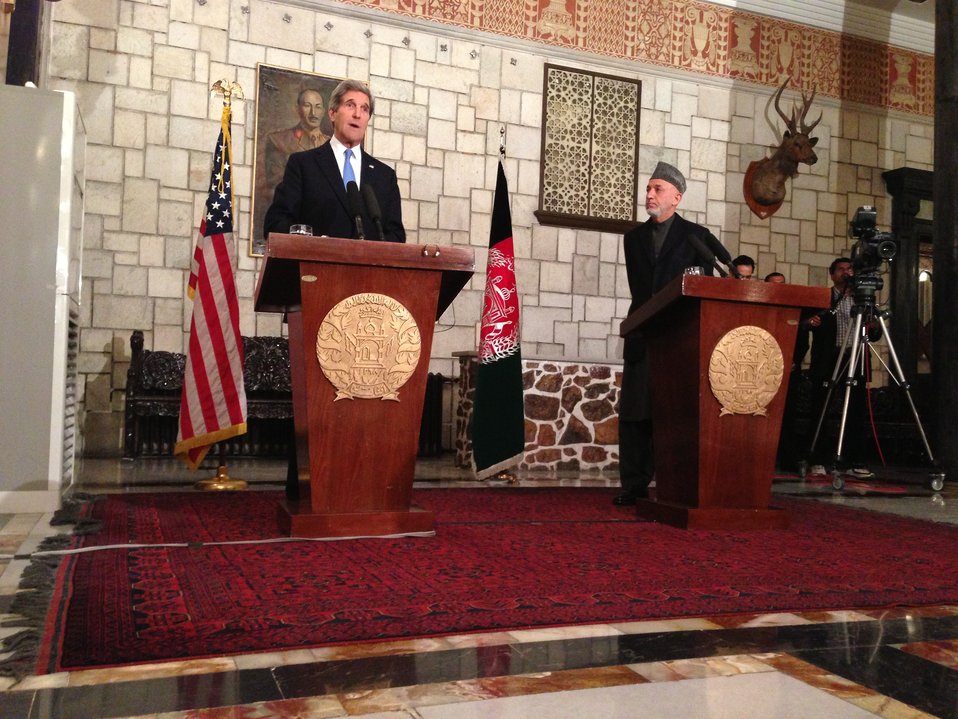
Secretary Kerry Delivers Remarks With Afghan President Karzai

U.S. Secretary of State John Kerry delivers remarks with Afghan President Hamid Karzai in Kabul, Afghanistan on March 25, 2013.